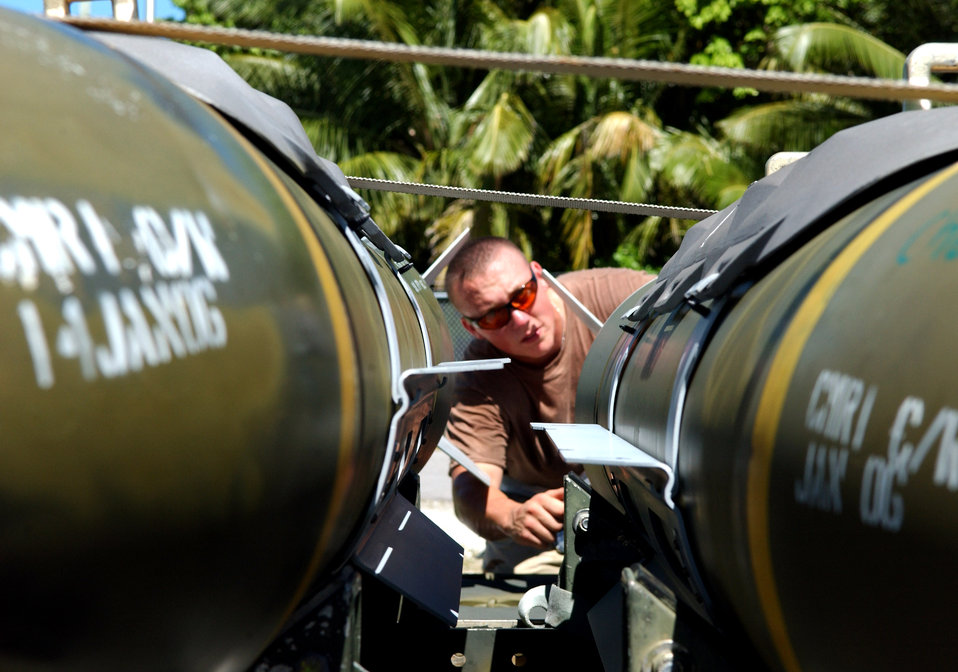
Munitions check

Airman 1st Class Joshua Dunne does a fuse check on a 2,000-pound bomb at a base supporting Operating Enduring Freedom on Wednesday, May 17, 2006. The Airman, of the 40th Air Expeditionary Group, deployed here from Barksdale Air Force Base.